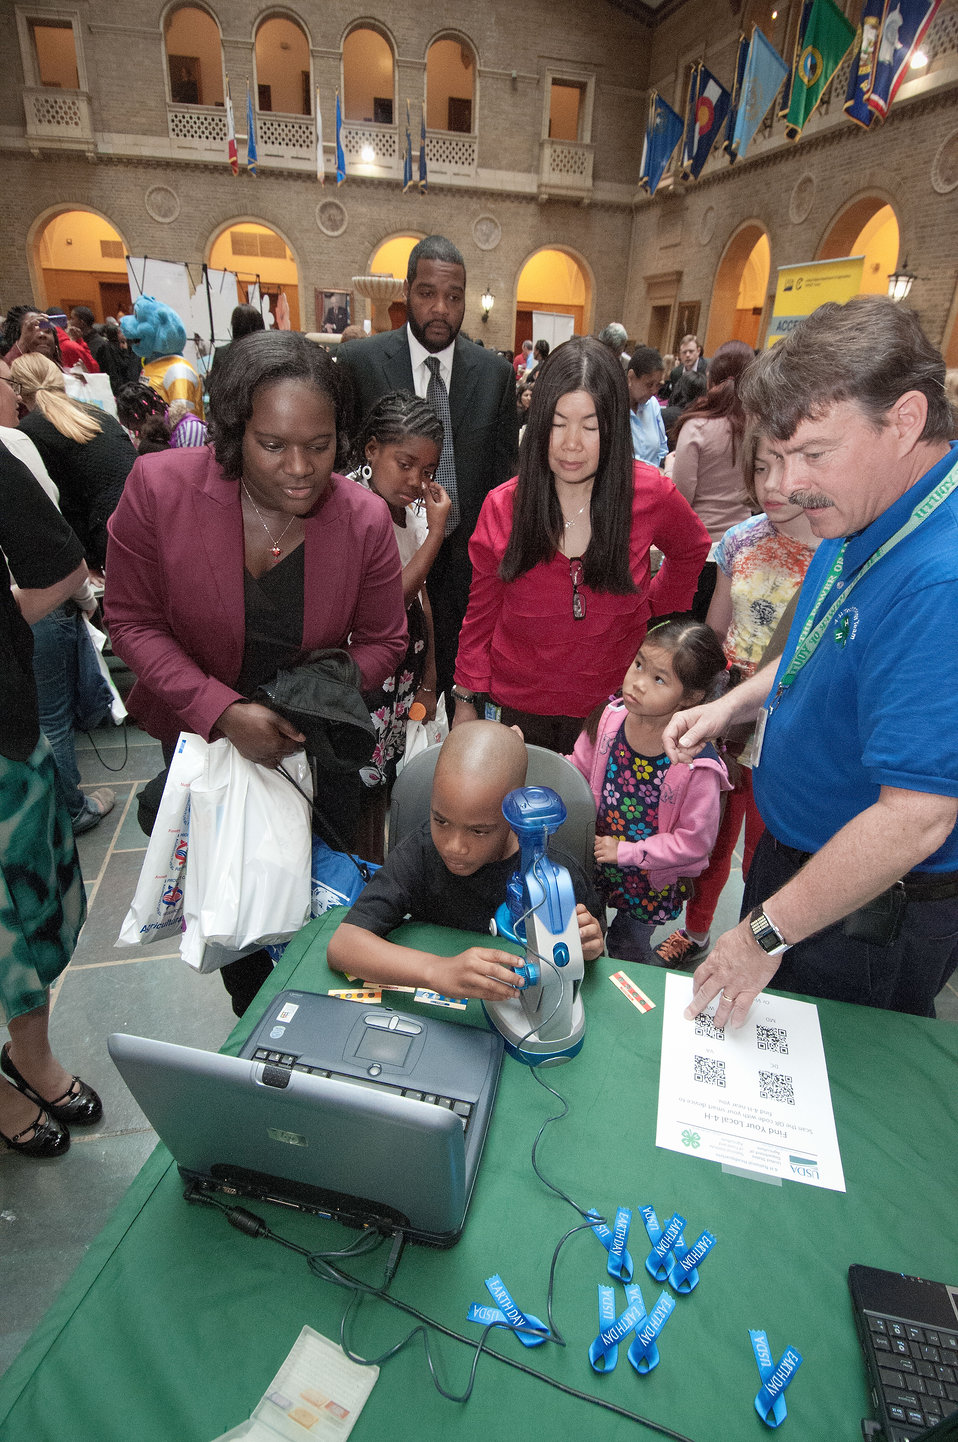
Dawana Clark and her son Reginald look at the structure of onion skin with a microscope at an exhibit sponsored by the National Institute of Food and Agriculture at the United States Department of Agriculture, Take Our Daughters and Sons to Work and Earth Day in Washington, D.C., on Thursday, April 26, 2012.